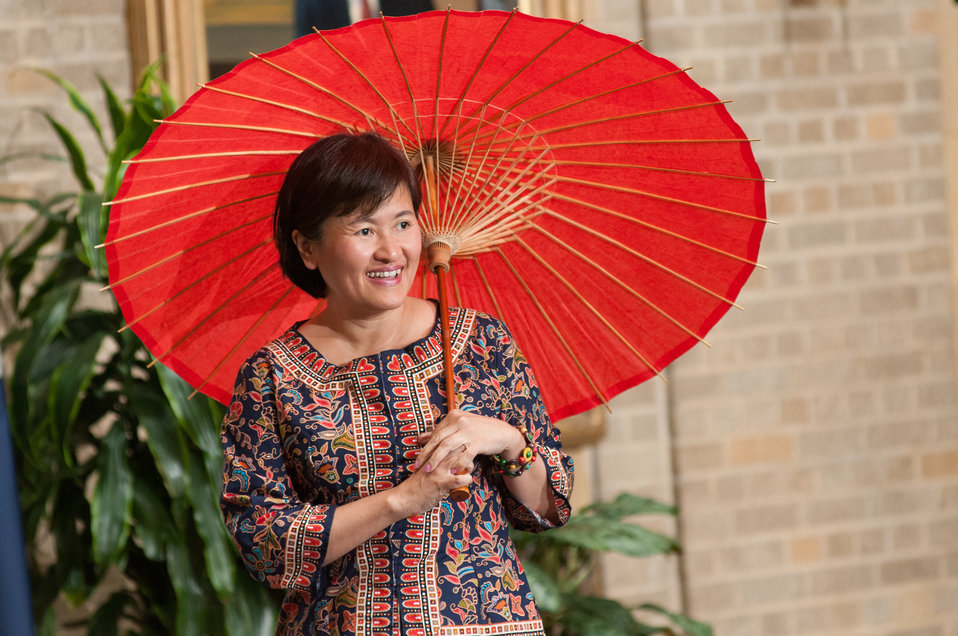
Traditional clothing from various Asian countries were demonstrated during this show of clothing, part of the U.S. Department of Agriculture (USDA) Asian Pacific American Heritage Month Observance program, at the USDA headquarters, Whitten Building patio, in Washington, D.C., on Thursday, May 23, 2013. This year’s theme is “Building leadership; Embracing the Cultural Values and Inclusions.”